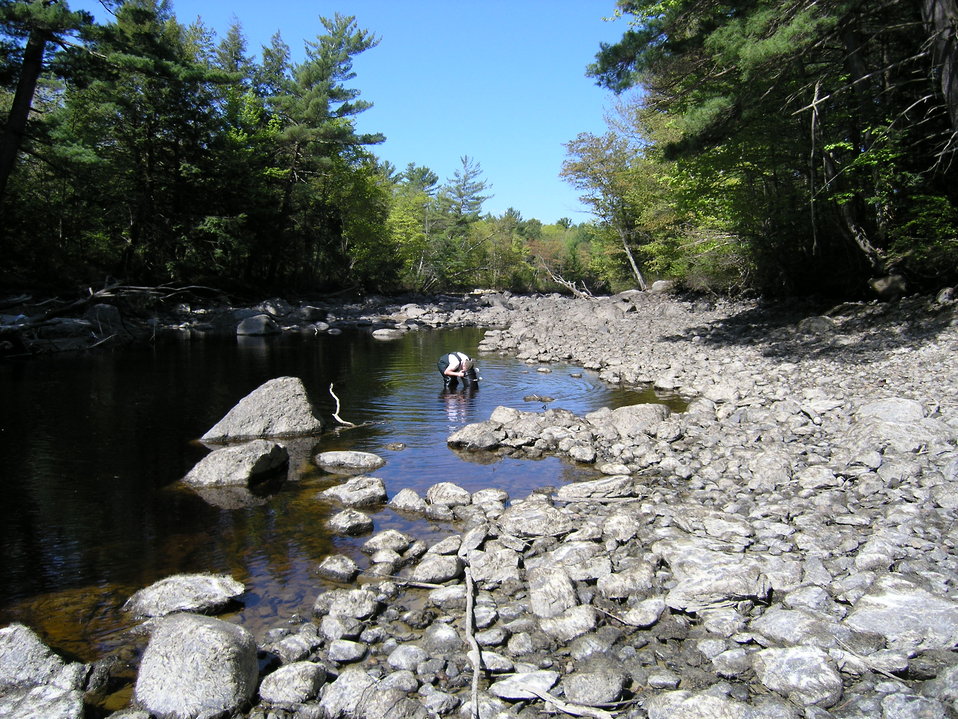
Surveying for mussels in drained river, Suncook, NH.